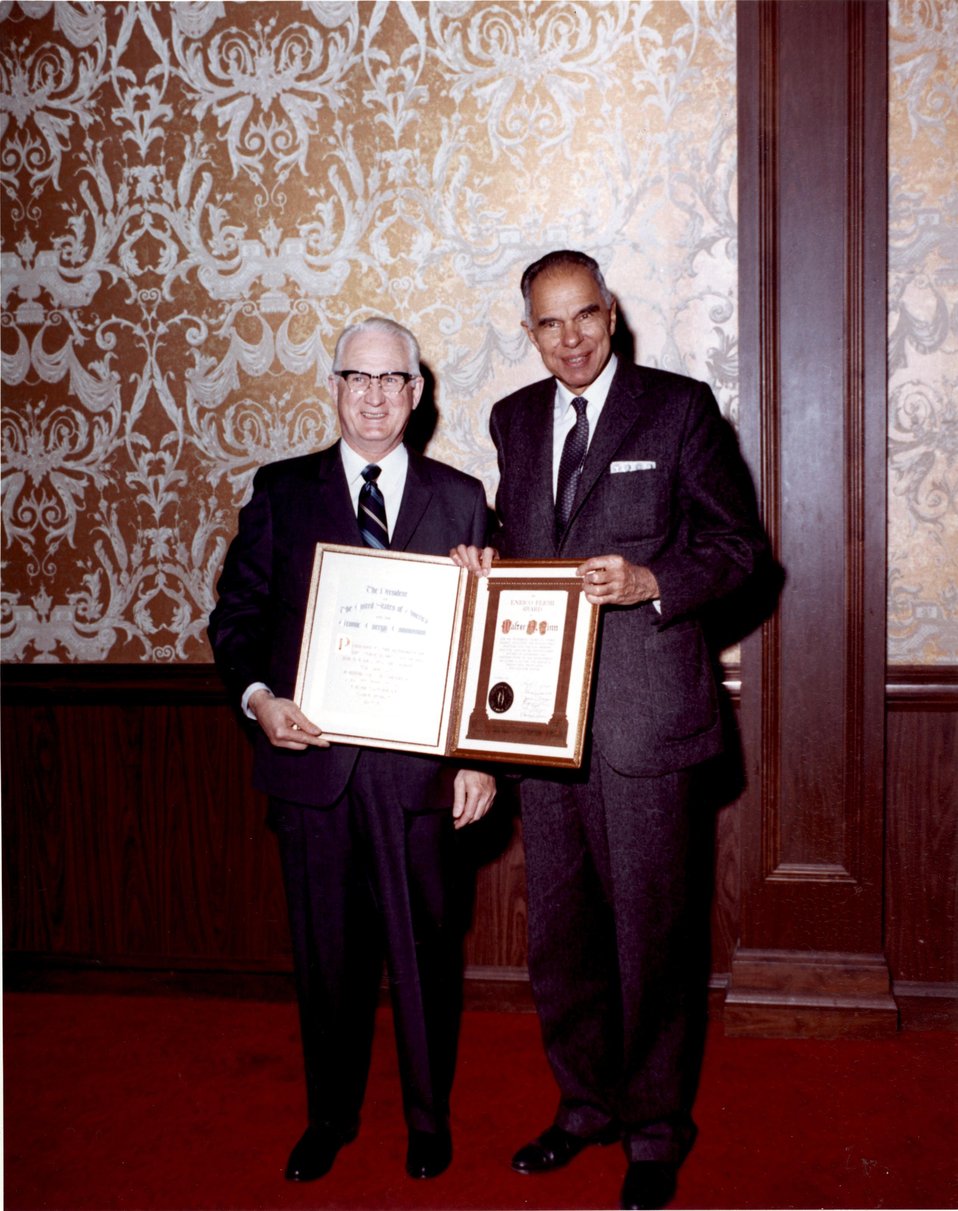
Walter H. Zinn. 1969. L to R- Walter Zinn and Seaborg.